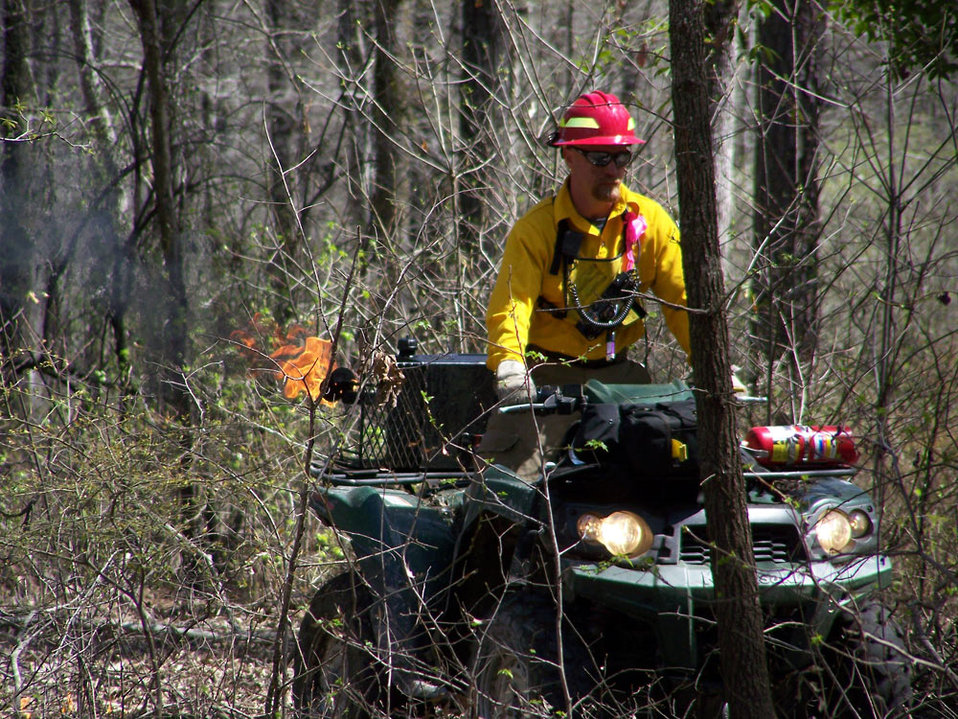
Rick Eastridge-Southeast Region

Rick Eastridge, a biologist and firefighter at South Arkansas Refuge Complex, served in the Army.